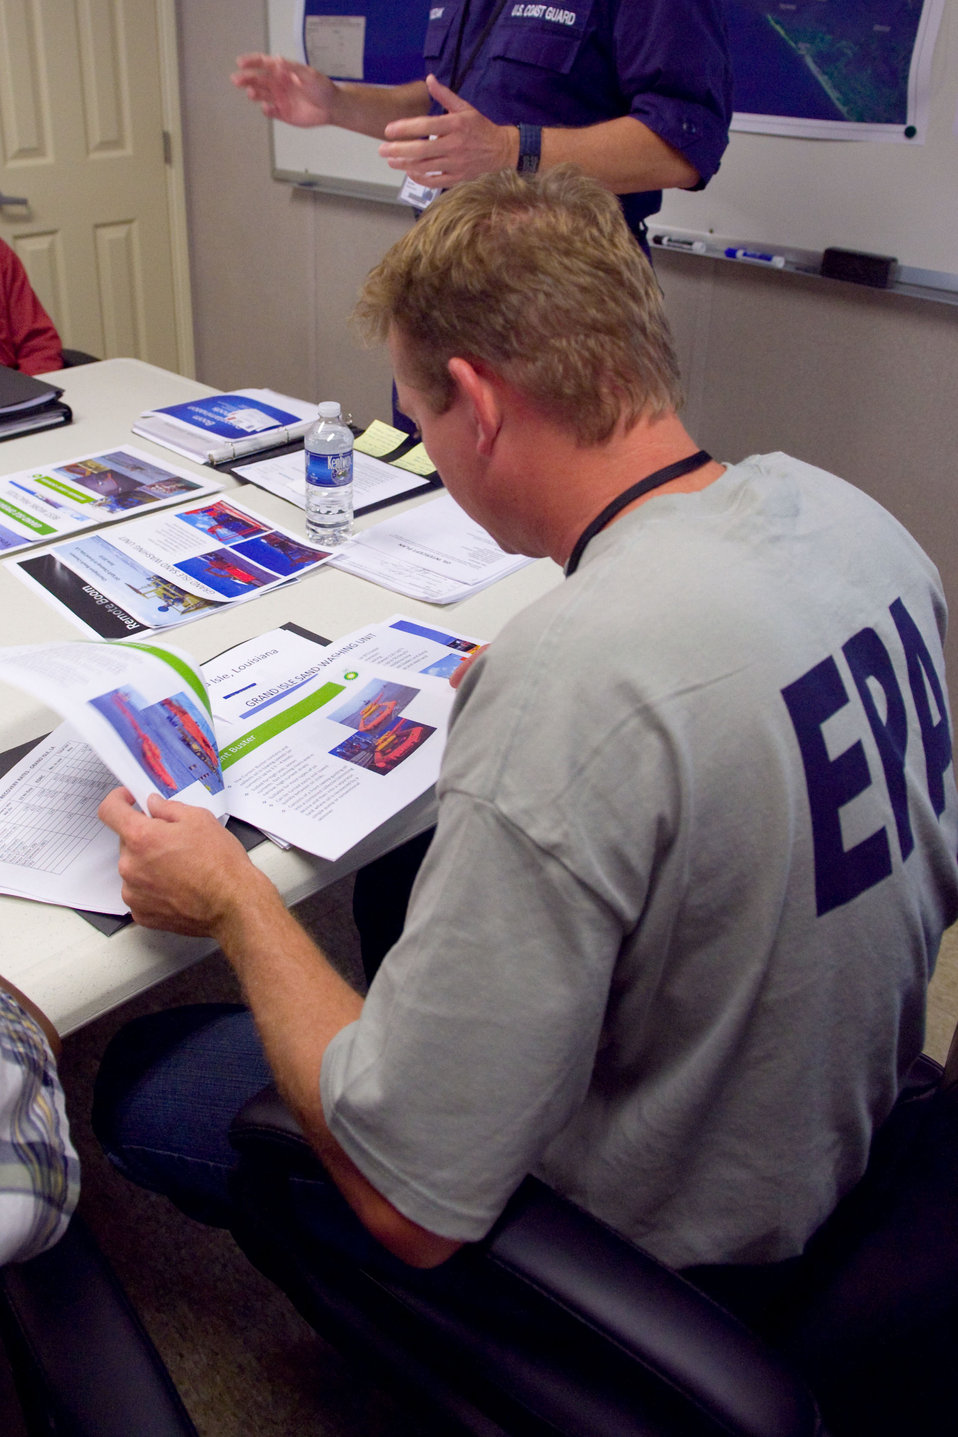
August 7, 2010 Morning waste site briefing

Going over the day's plan for waste site visits.